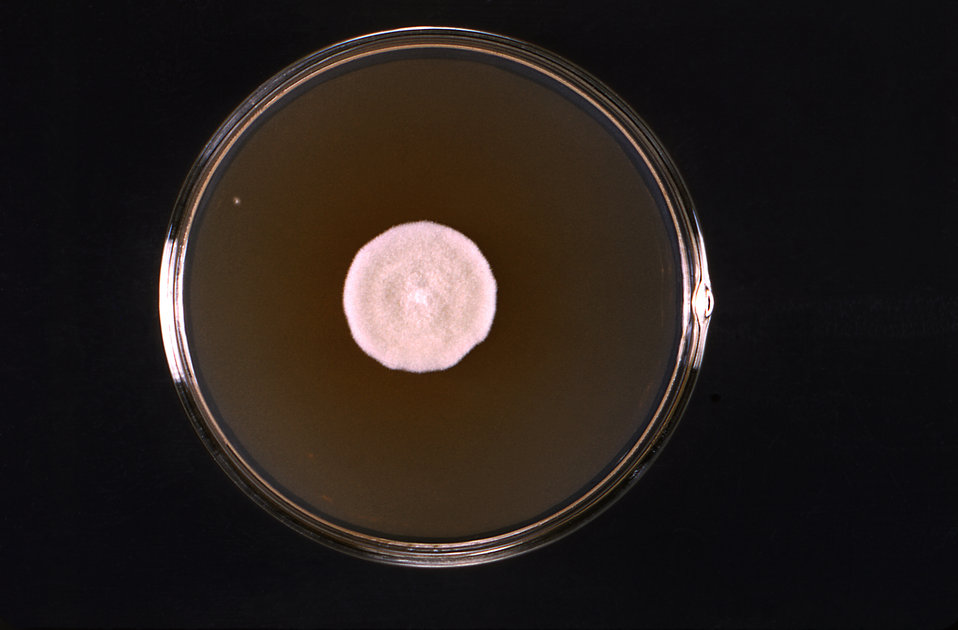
This image depicts a single young colony of fungal organisms from the genus Sepedonium, which had been grown on a medium of Sabouraud dextrose agar.